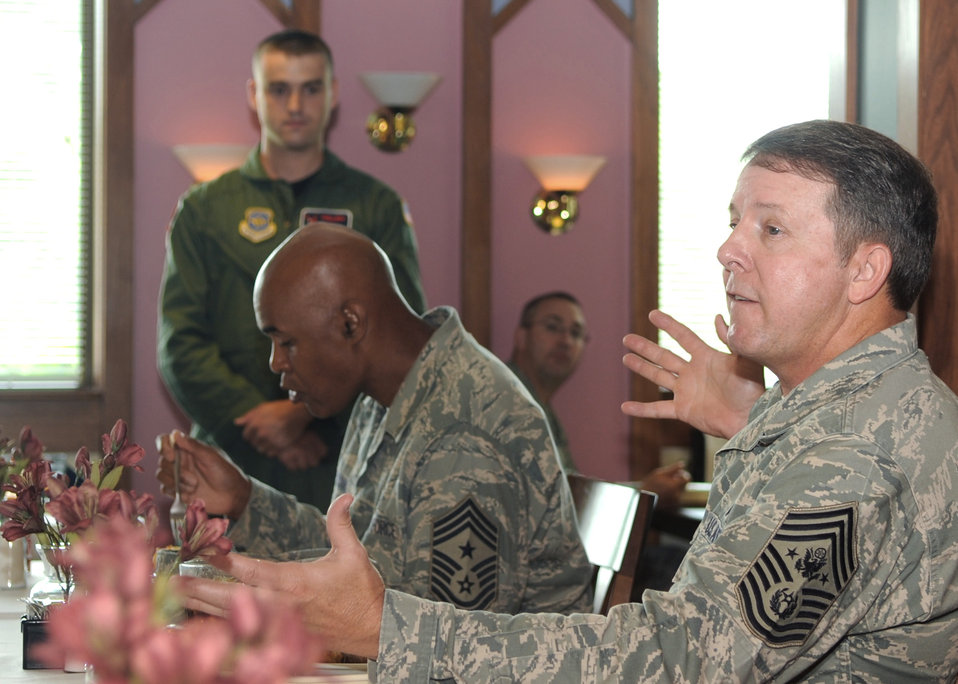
CMSAF McKinley begins, ends Air Force career at Seymour

Chief Master Sgt. of the Air Force Rodney McKinley (right) fields questions from Airmen in the Southern Eagle Dining Facility on Seymour Johnson Air Force Base, June 12. Airmen listen as CMSAF McKinley explains his perspective on issues that will affect the future of the Air Force.